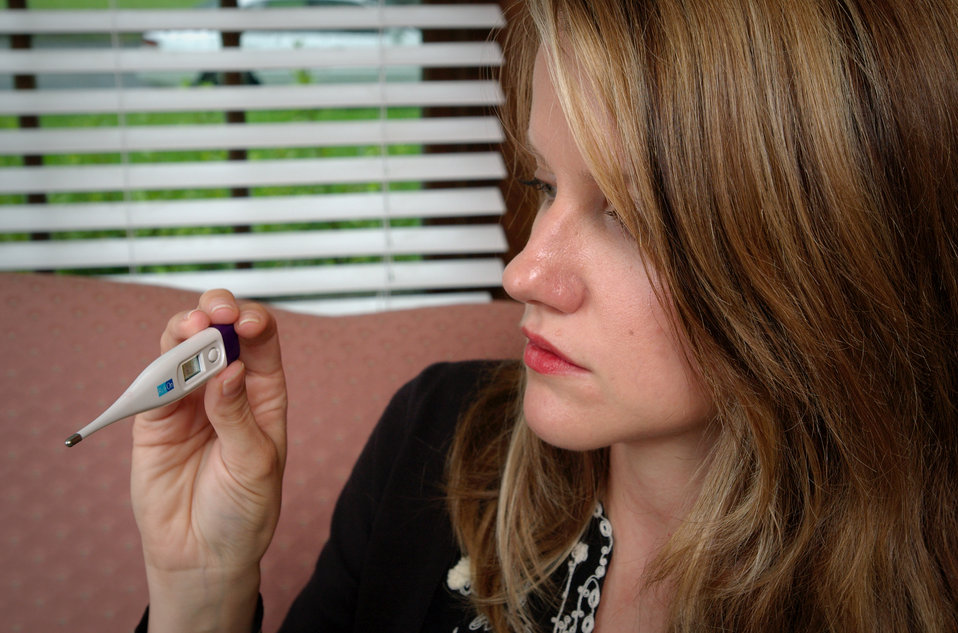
This photograph depicted a woman who was reading a modern, battery-powered oral thermometer, in order to measure her body temperature. In order to return an accurate reading, this particular type of thermometer needed to be placed beneath the user's tongue, for a set amount of time, beeping when the ambient, sublingual temperature was reached.